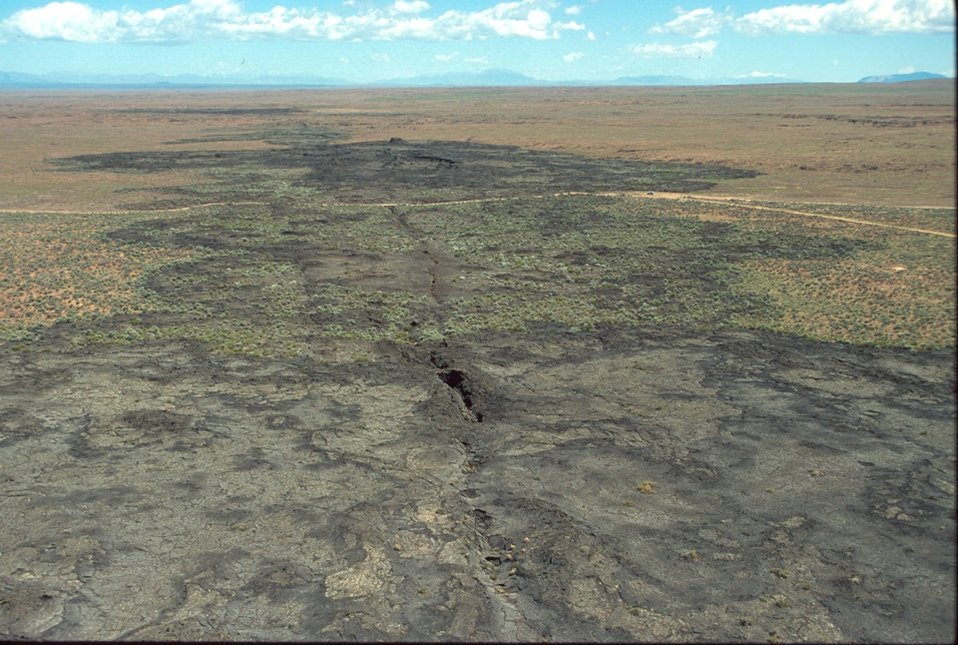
Shoshone Field Office USRD Upper Snake River District